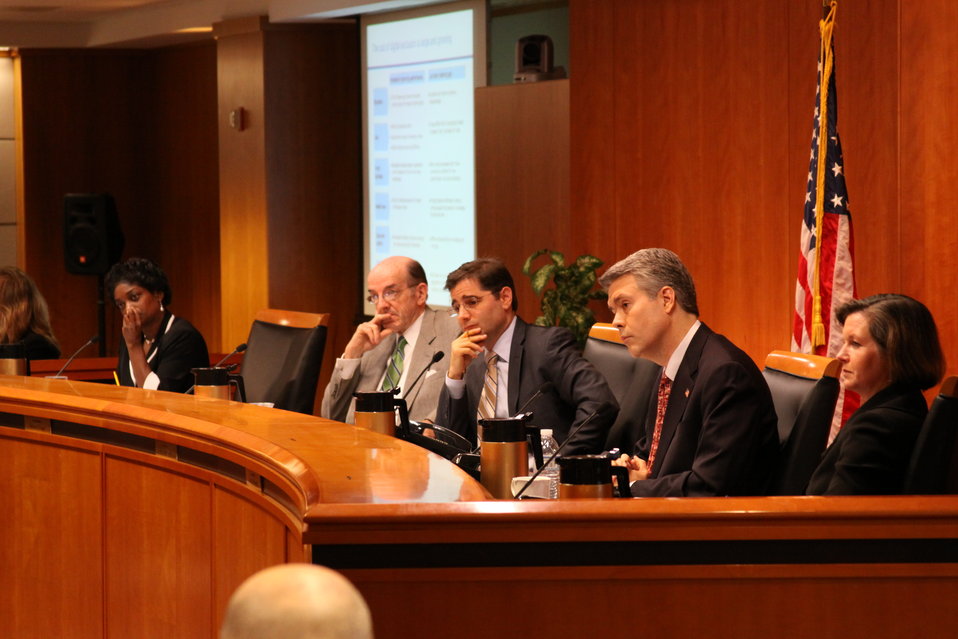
November Open Meeting